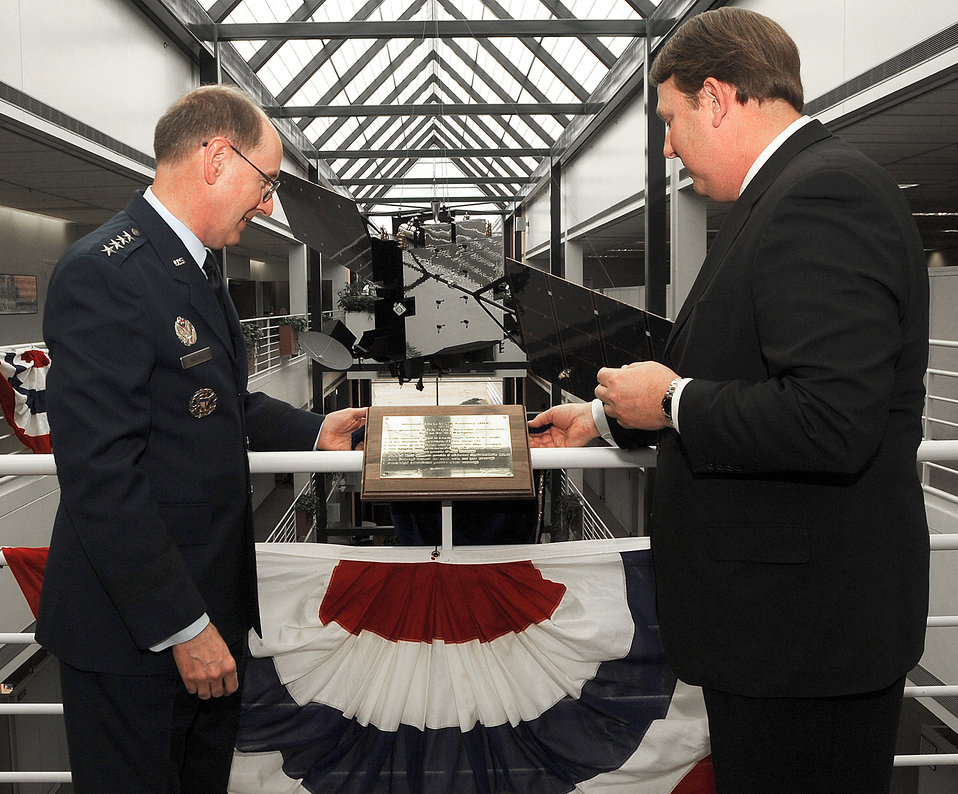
New Advanced Extremely High Frequency satellite

Gen. C. Robert Kehler, commander of Air Force Space Command, and Mr. Kevin Bilger, vice president and general manager of Global Communications Systems at Lockheed Martin, unveil the plaque describing the new Advanced Extremely High Frequency satellite model. The one-quarter scale model was donated to AFSPC April 1 by Mr. Bilger on behalf of Lockheed Martin. The first AEHF satellite is scheduled to be launched the last quarter of 2010.